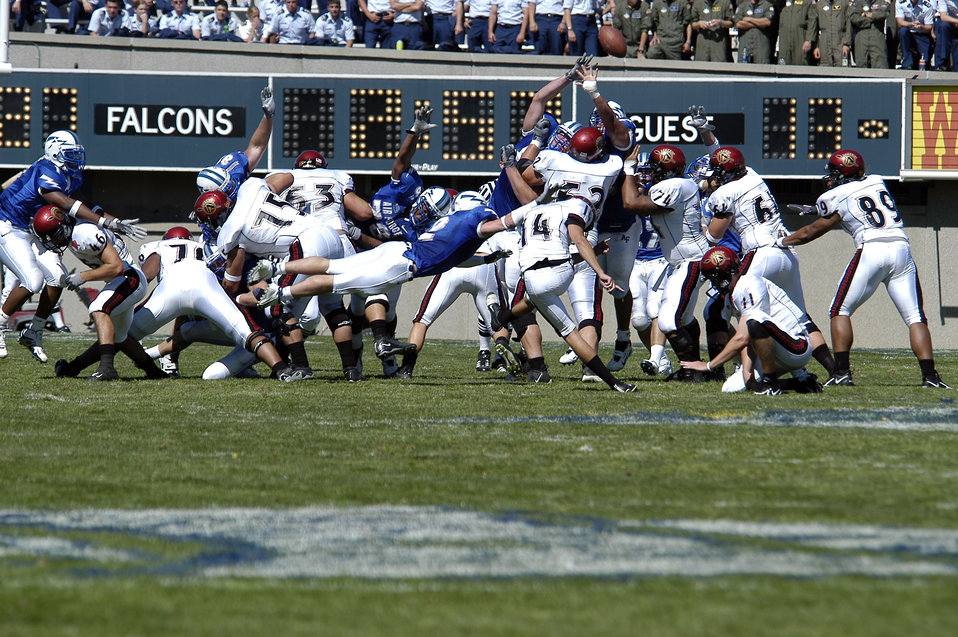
Falcons win

U.S. AIR FORCE ACADEMY, Colo. -- Falcon special teams member Carson Bird, 2, gets horizontal trying to block a field goal attempt by San Diego State University place kicker Garrett Palmer, 14. The kick was good. The Falcons went on to beat the Aztecs 41-29.